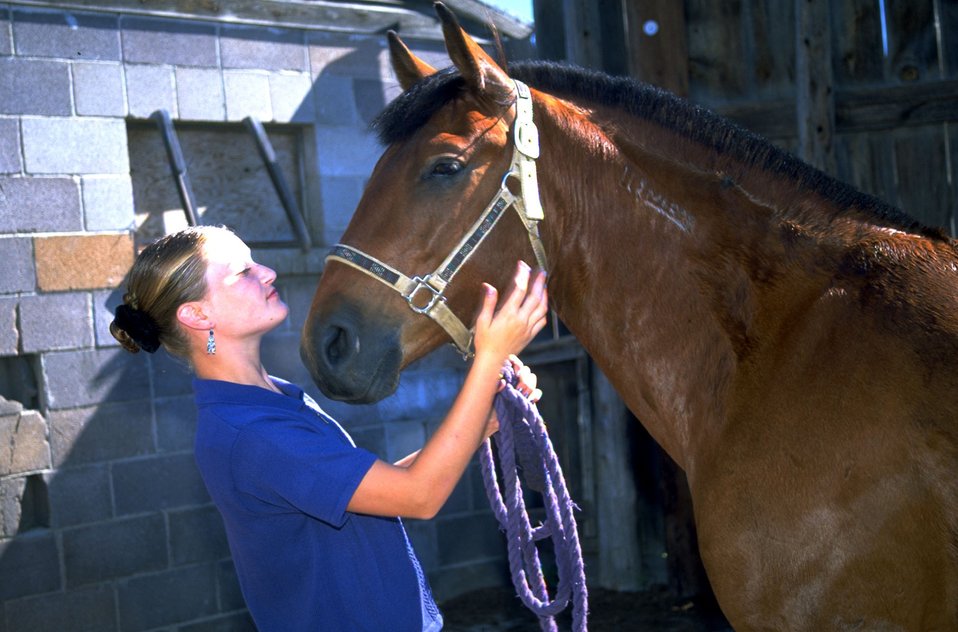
Adopted Horse, haltered